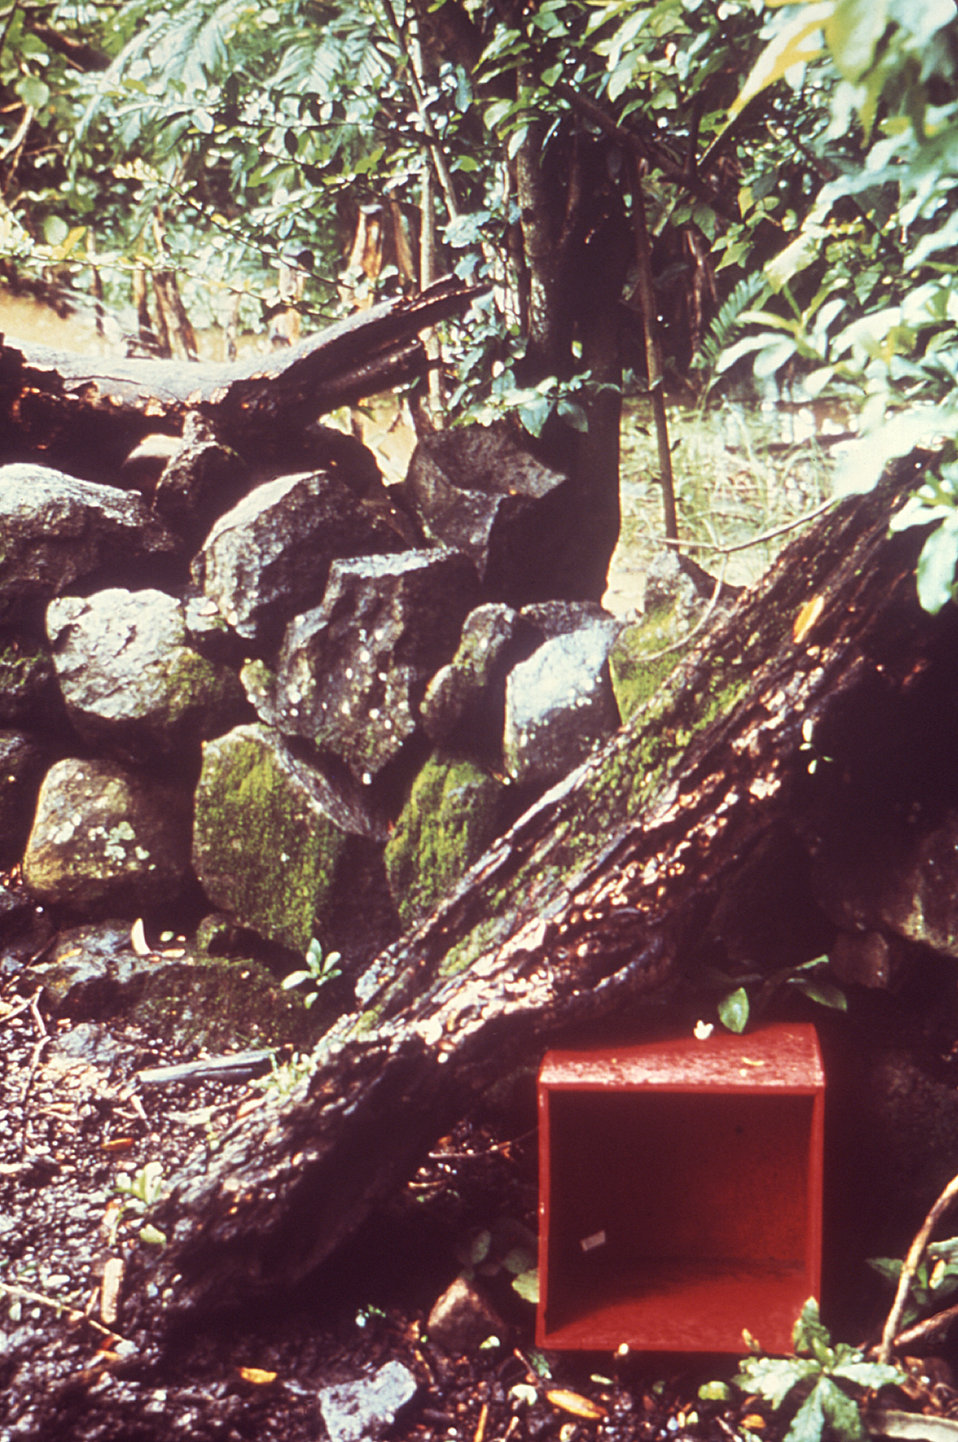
This 1970 photograph depicted the placement of a red, 1 cubic foot resting station used to attract adult Anopheles albimanus mosquitoes in El Salvador.